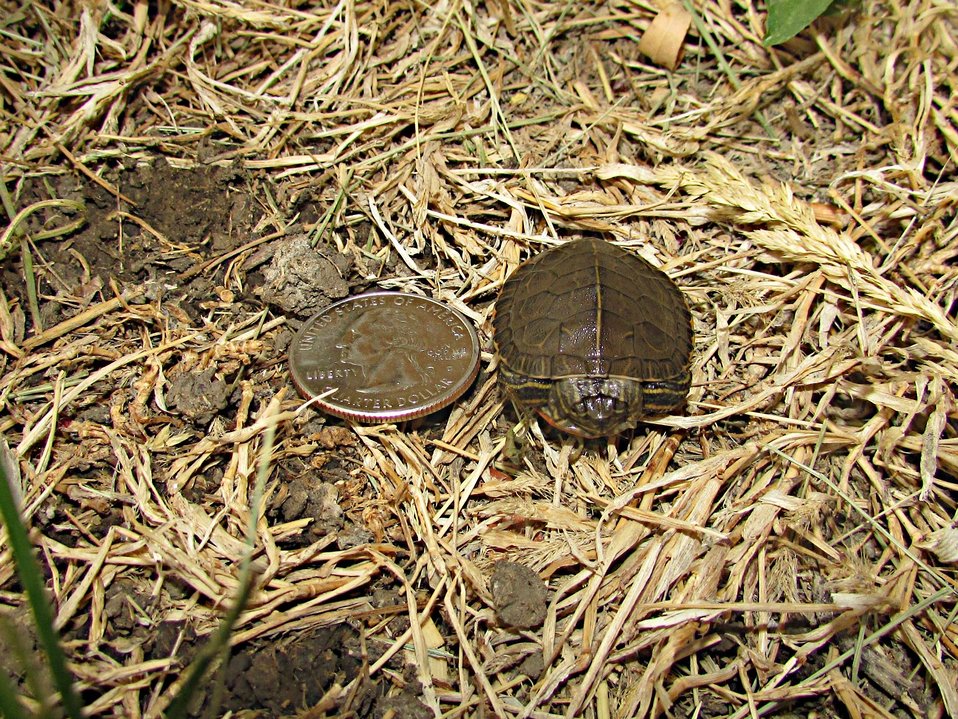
Baby Turtle

Fish aren't the only creatures hatching around here. This morning we found this painted turtle, which barely eclipsed a quarter.